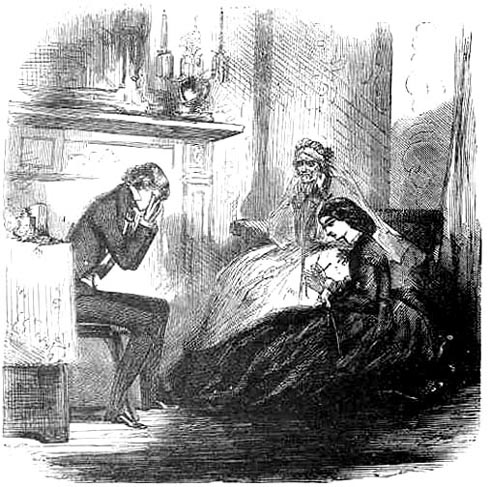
Pip, Estella and Miss Havisham, by John McLenan